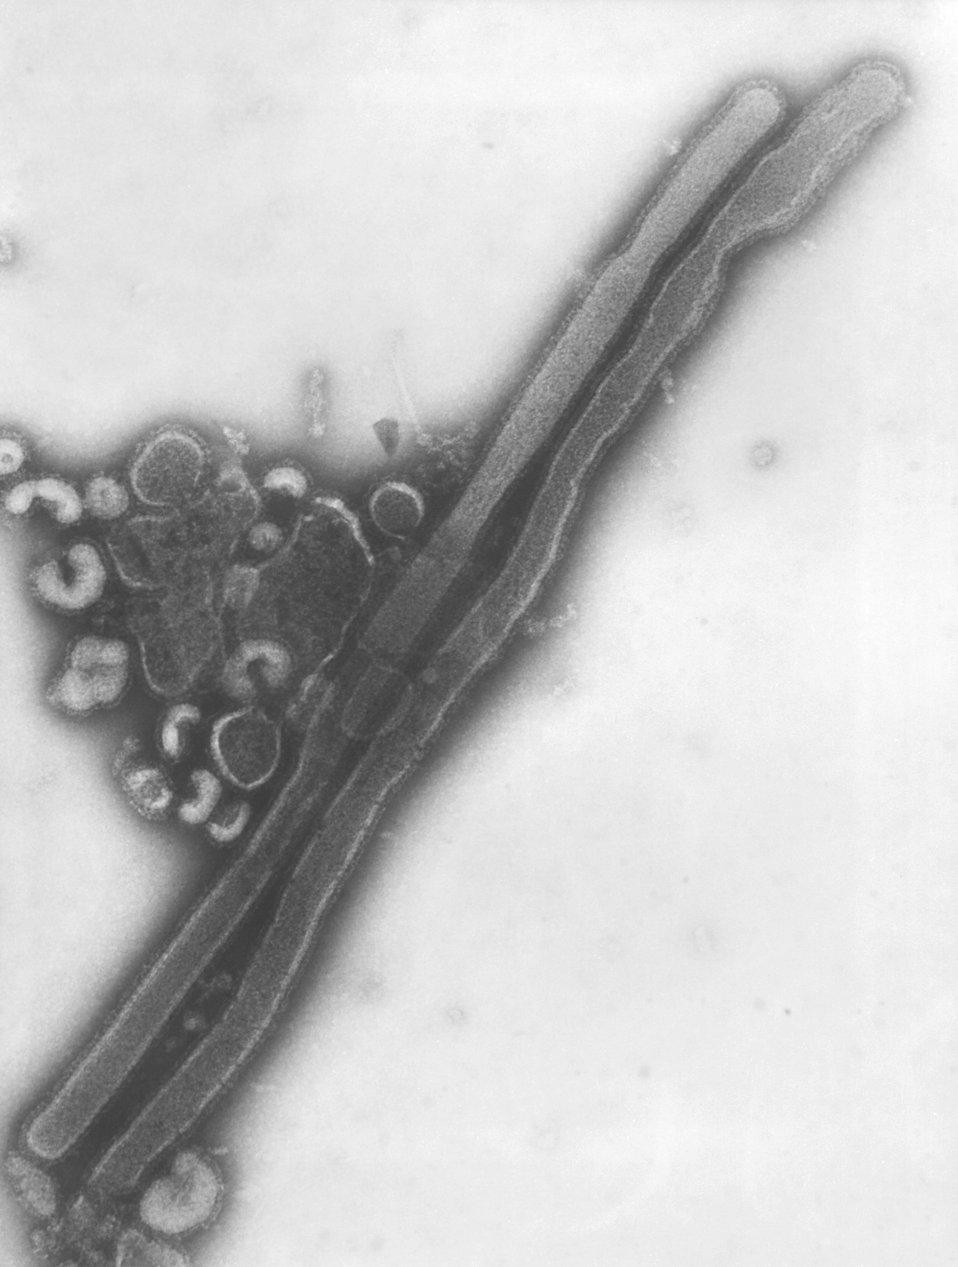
This negatively-stained transmission electron micrograph (TEM) revealed the presence of a number of influenza virus virions. This virus is a Orthomyxoviridae virus family member.